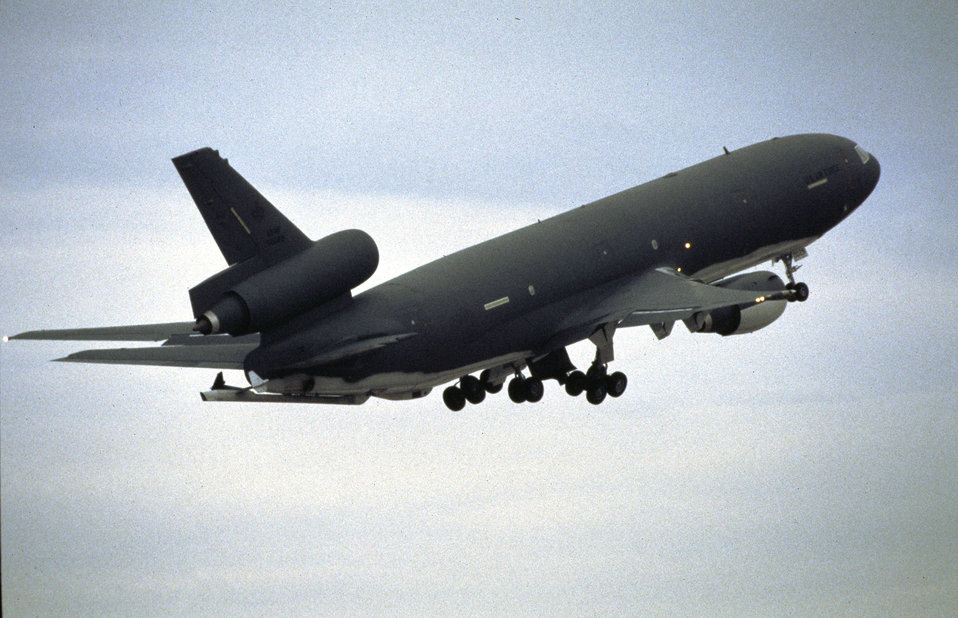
KC-10

1980s -- The KC-10 Extender entered service in 1981.